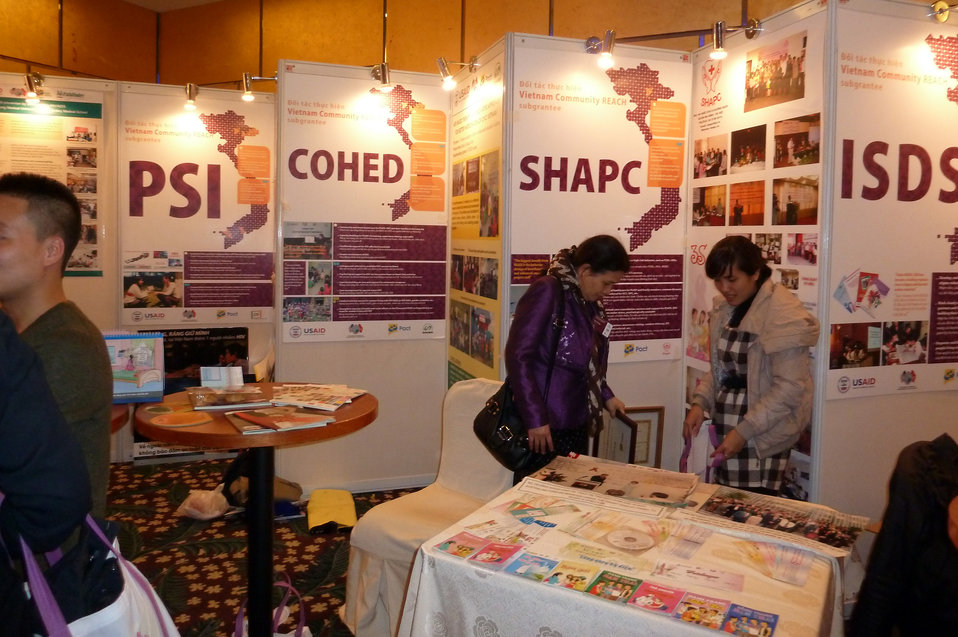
Implementing partners display their materials at the Community REACH workshop

Community REACH project close-out with USAID and implementing partner, Pact